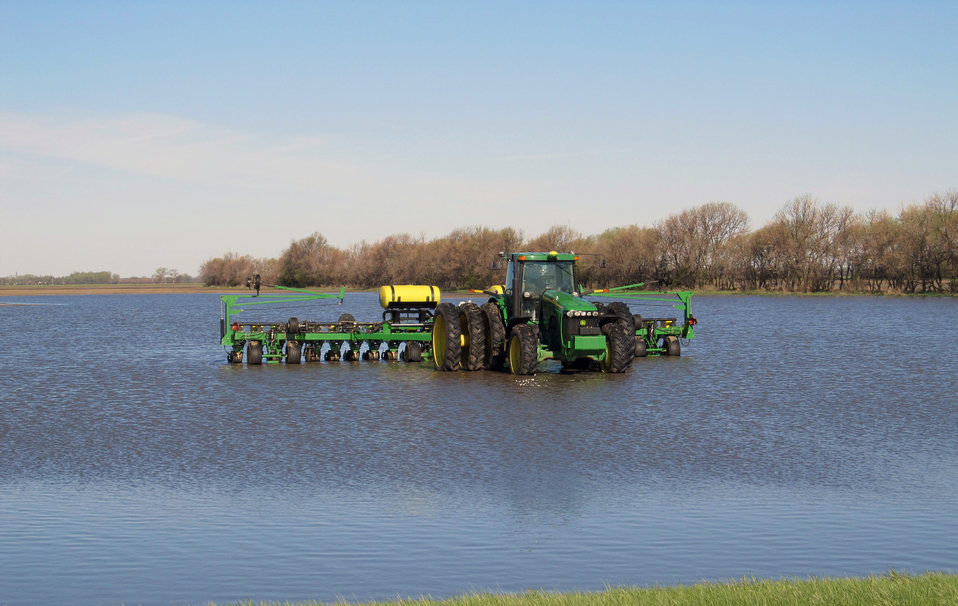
Flooding and water damage in the Park and Tongue River Watersheds located in Cavalier, Pembina and Cavalaier Counties in ND on Thursday, May 23, 2013.